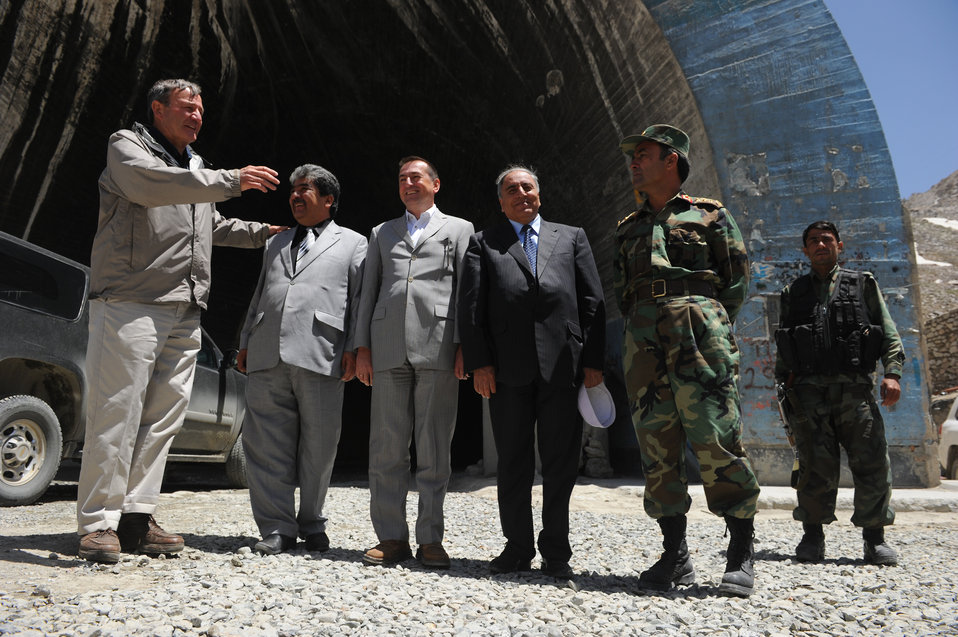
U.S. Ambassador Karl W. Eikenberry attends a ceremony to mark the beginning of renovations at the Salang Tunnel on the border of Parwan and Baghlan Provinces, Afghanistan, on Wednesday, June 15, 2011. (S.K.Vemmer/Department of State)